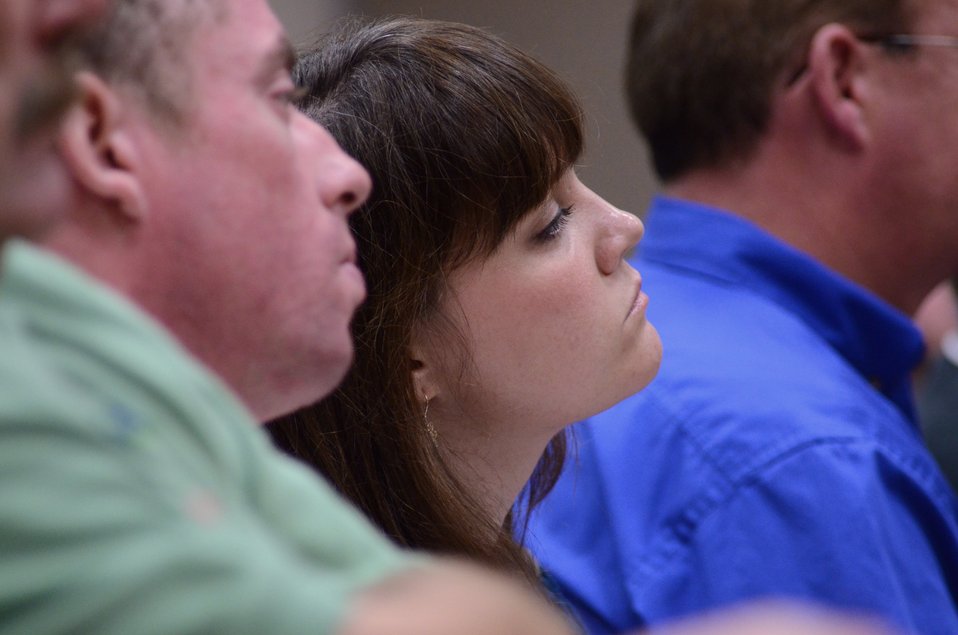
Members of the audience listen to Agriculture Secretary Tom Vilsack speaks at the White House Rural Forum at the Wisconsin State Fair, in West Allis, WI, on Thursday, August 4, 2011, to businesses and community leaders, farmers and ranchers to explore ways federal, state and local officials can work together to improve economic conditions and create jobs. The forum is part of a series of White House Rural Roundtables that are being held across the country this summer with senior Administration officials.